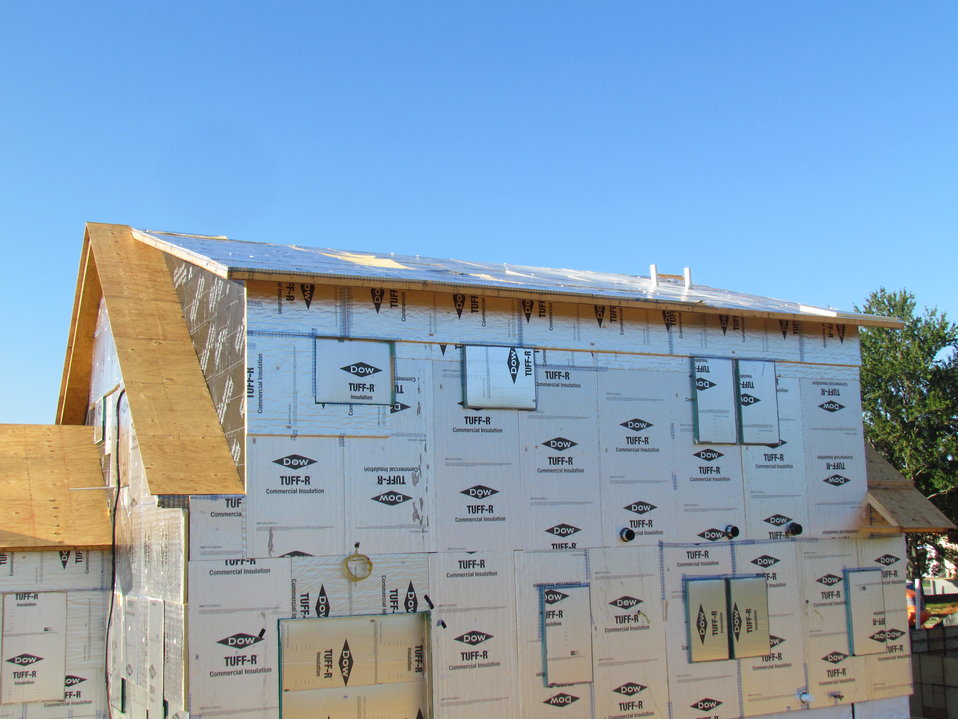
Net-Zero Energy Residential Test Facility - Photo showing first layer of foil-faced insulation on rear of facility.